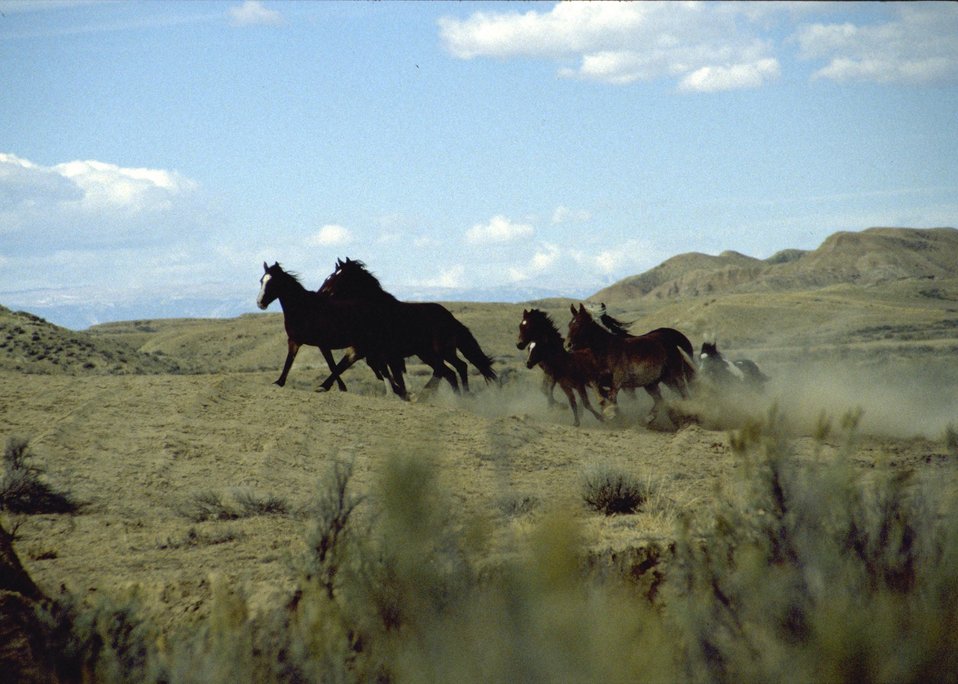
Wild Horses in Wyoming.